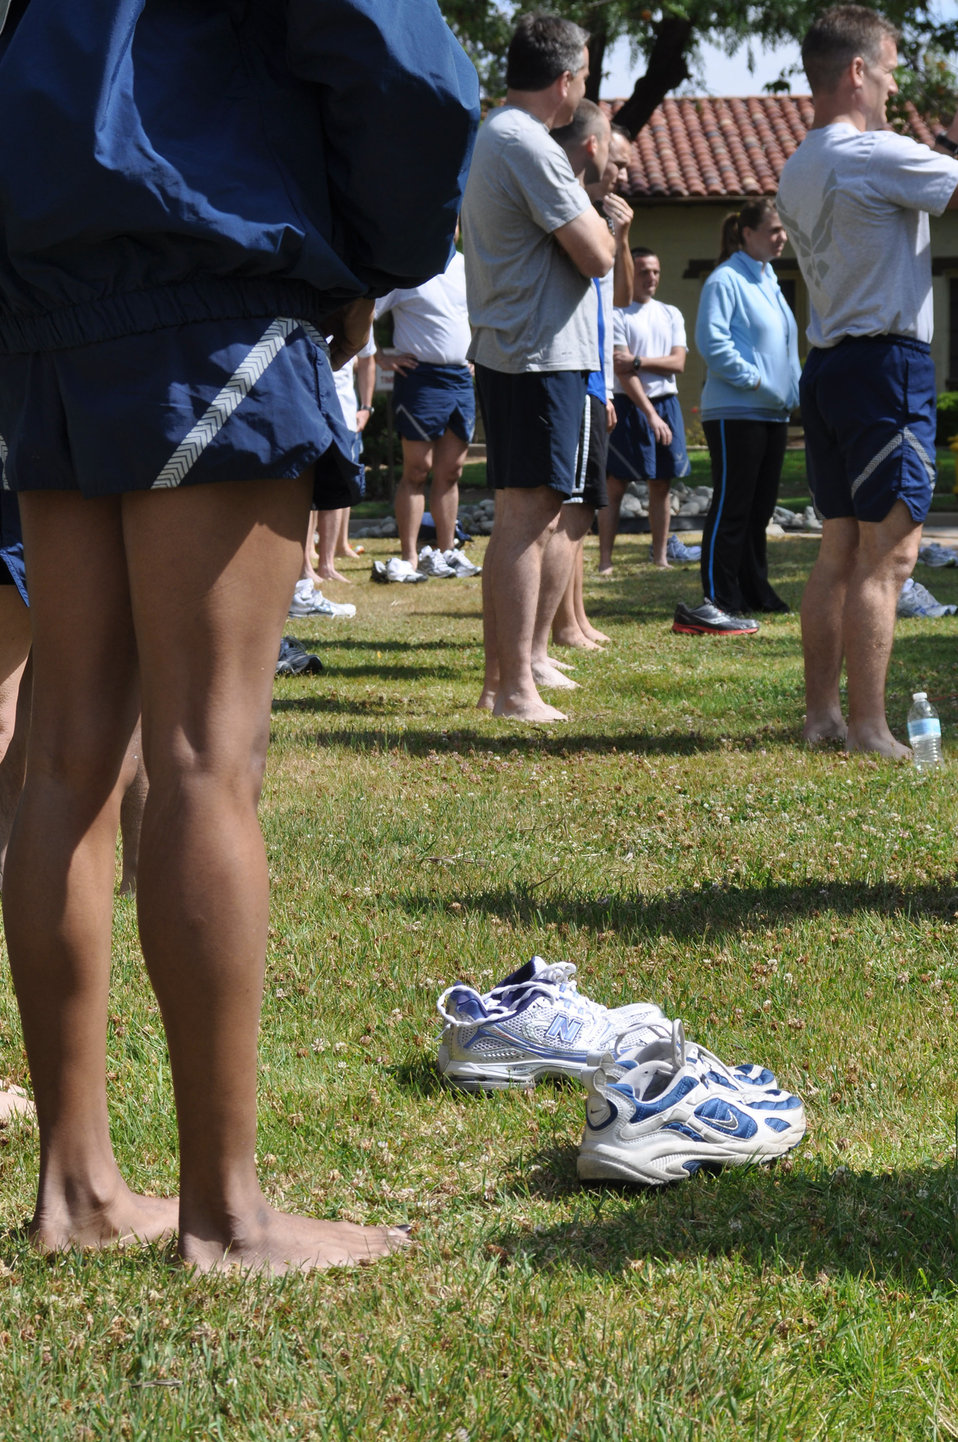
March FITT running program

Runners stand barefoot in the grass during a running clinic at June 12, 2011, at March Air Reserve Base, Calif. The clinic was a joint effort between the 452nd Air Mobility Wing and the March Fitnesss and Inspiration Through Teamwork organization.